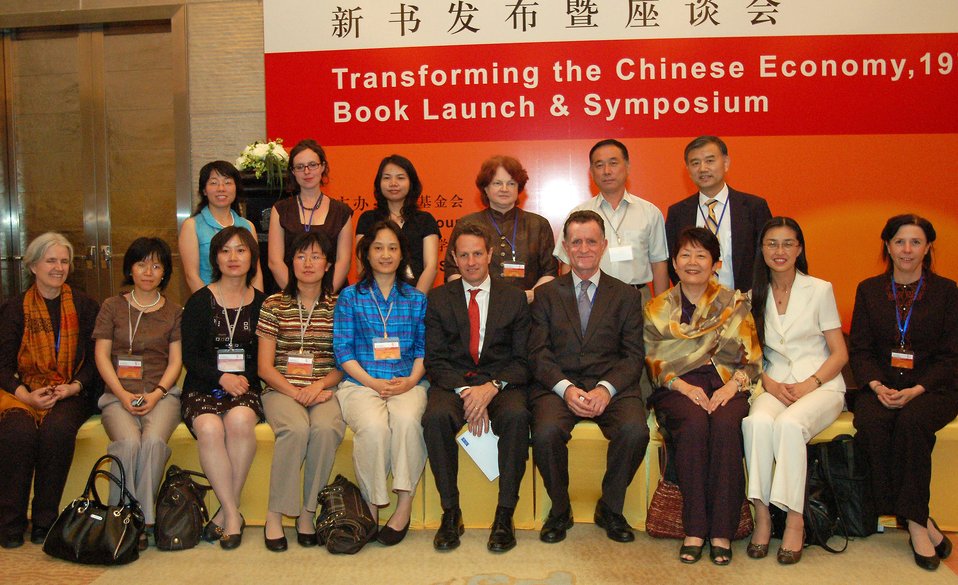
China trip: May 31-June 2 2009

Secretary Geithner and members of the Ford Foundation in Beijing, China.